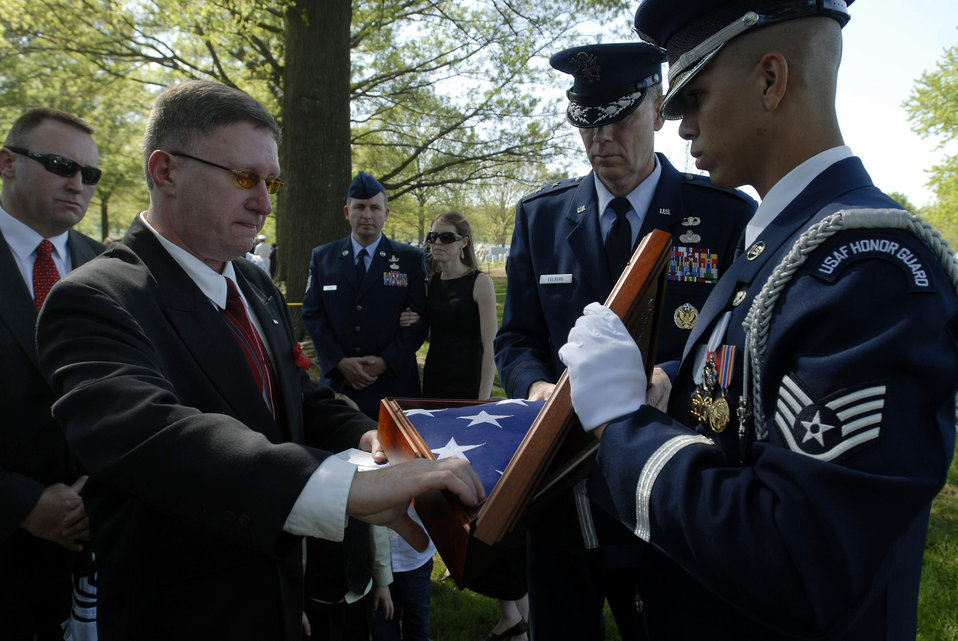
A fallen hero is laid to rest

Eddie Myers places a folded flag in a shadow box following the funeral for his son, Tech. Sgt. Phillip A. Myers, April 27 at Arlington National Cemetery. Sergeant Myers, from Hopewell, Va., was killed April 4 in Afghanistan by an improvised explosive device. His family was the first to allow media coverage of the dignified transfer of remains at Dover Air Force Base, Del., since Defense Secretary Robert Gates lifted the 1991 ban April 6.